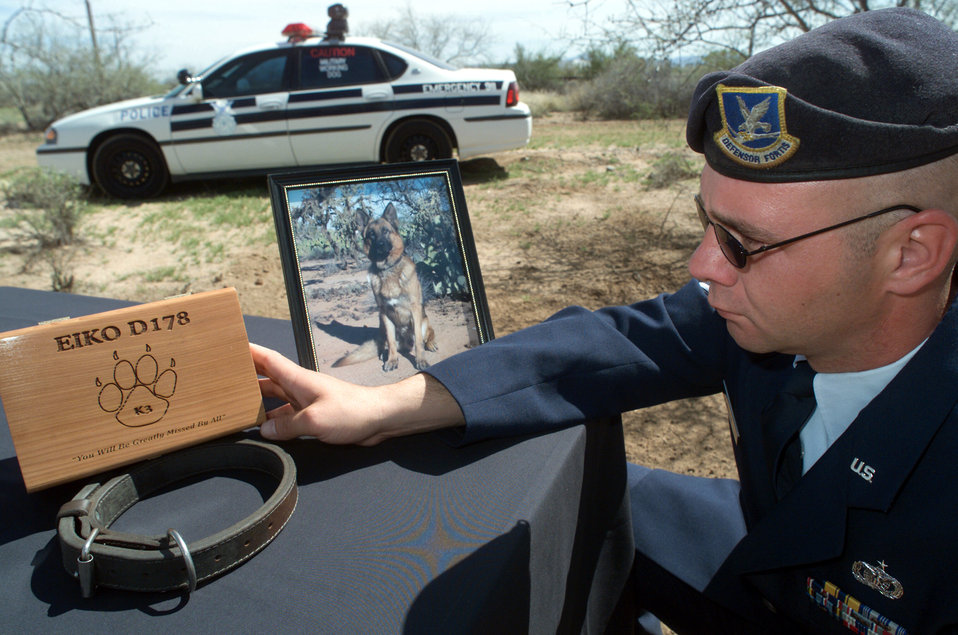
Goodbye my friend

DAVIS-MONTHAN AIR FORCE BASE, Ariz. (AFPN) - Staff Sgt. Jason Winge touches the case containing the remains of his friend and partner, Eiko. The 3-year-old military working dog died of complications following surgery. The pair deployed to Southwest Asia supporting operations Enduring Freedom and Iraqi Freedom for 192 days. Eiko's ashes were buried behind the K-9 facility here, and a tree was planted in his memory. Sergeant Winge is assigned to the 355th Security Forces Squadron.